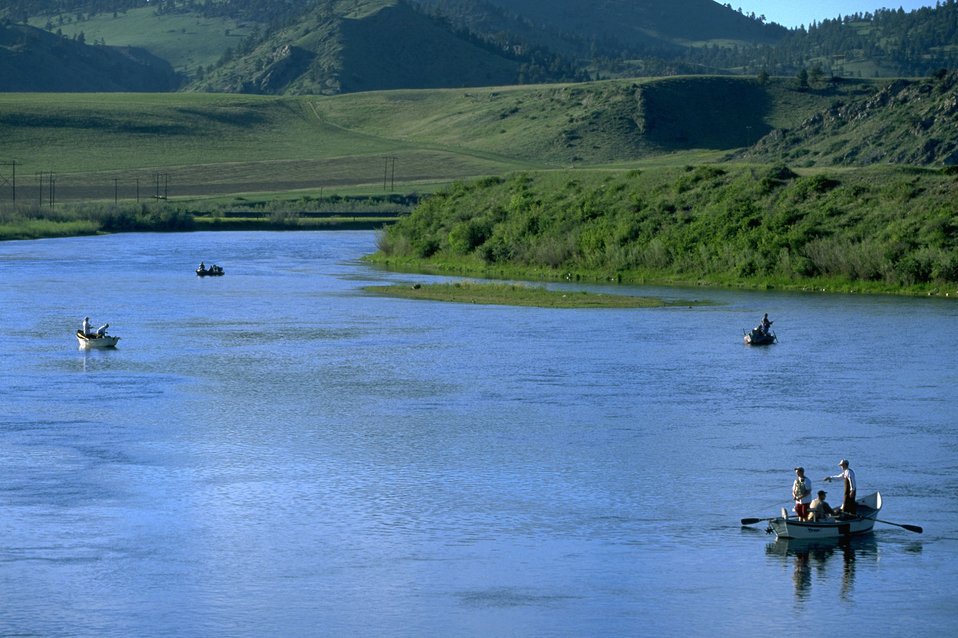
Fishing from boats on the Missouri River